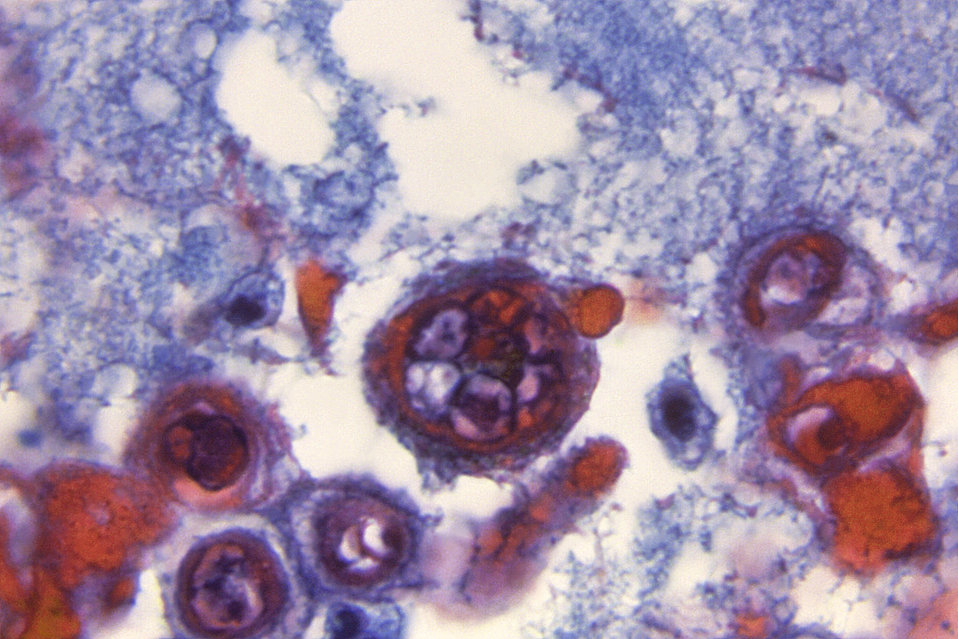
Under a relatively high magnification of 1200X, this photomicrograph reveals some of the cytoarchitectural histopathologic changes which you'd find in a human skin tissue specimen that included a chickenpox, or varicella zoster virus lesion.